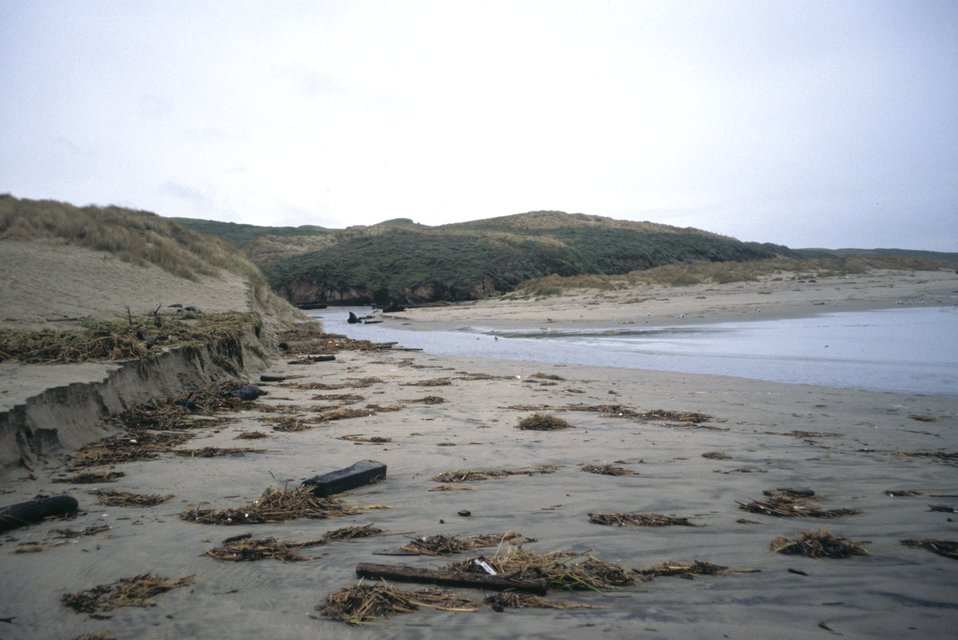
Point Reyes Great Beach. A stream cutting through the dunes.